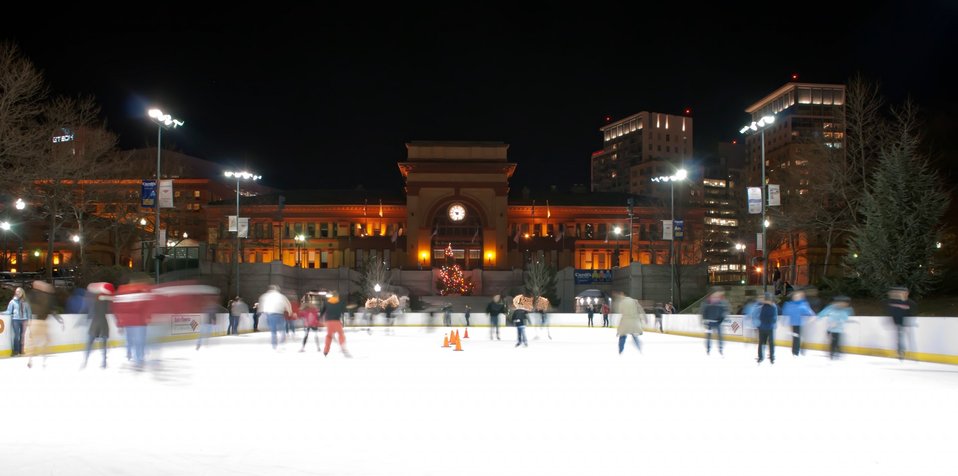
Winter in providence rhode island

Winter skating in providence rhode island.